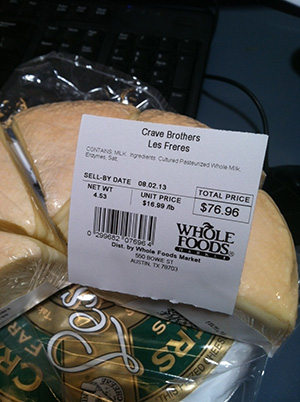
RECALLED – Cheese

July 5, 2013 – Product Recall – Whole Foods Market recalls cheese because of possible health risk.